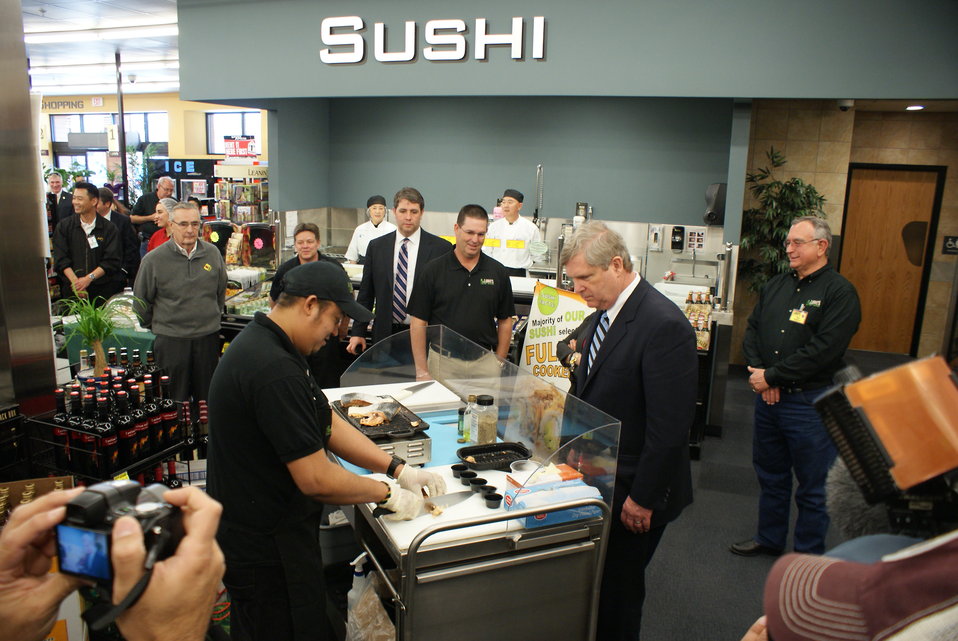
Agriculture Secretary Tom Vilsack samples cooked chicken at Lowe's Corner Market in Albuquerque, NM on Mar. 10, 2014.